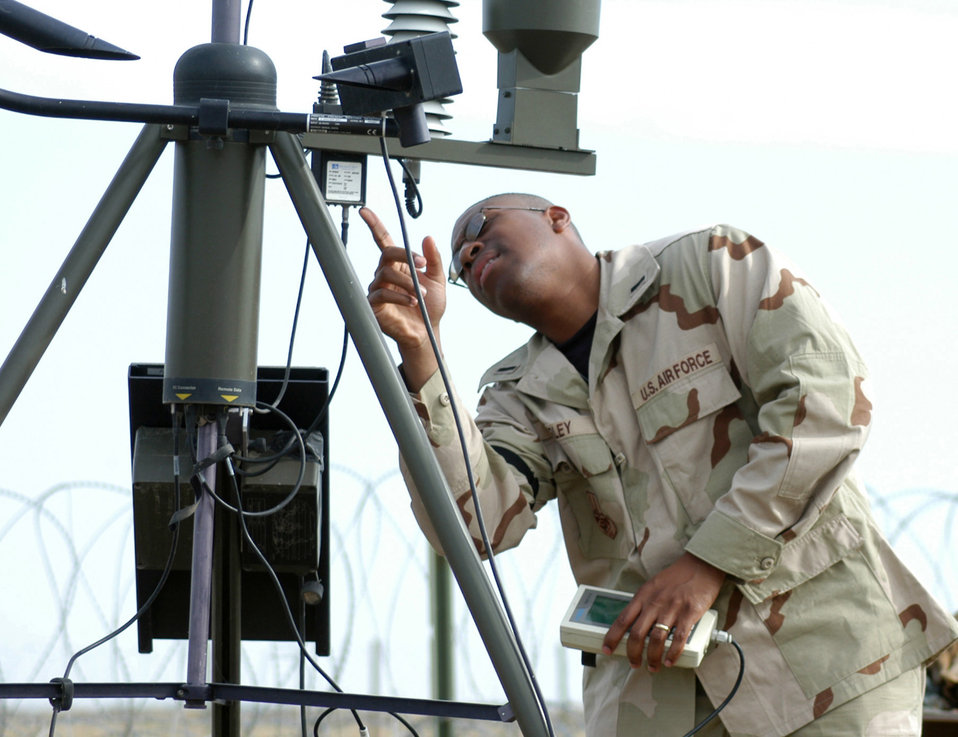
Weather inspectors

KARSHI-KHANABAD AIR BASE, Uzbekistan -- First Lt. John Hurley conducts site inspections of the remote weather instrumentation near the flight line here. Lieutenant Hurley is the officer in charge of the combat weather team operations. He is assigned with the 416th Expeditionary Operations Support Squadron weather flight and deployed from Kadena Air Base, Japan.